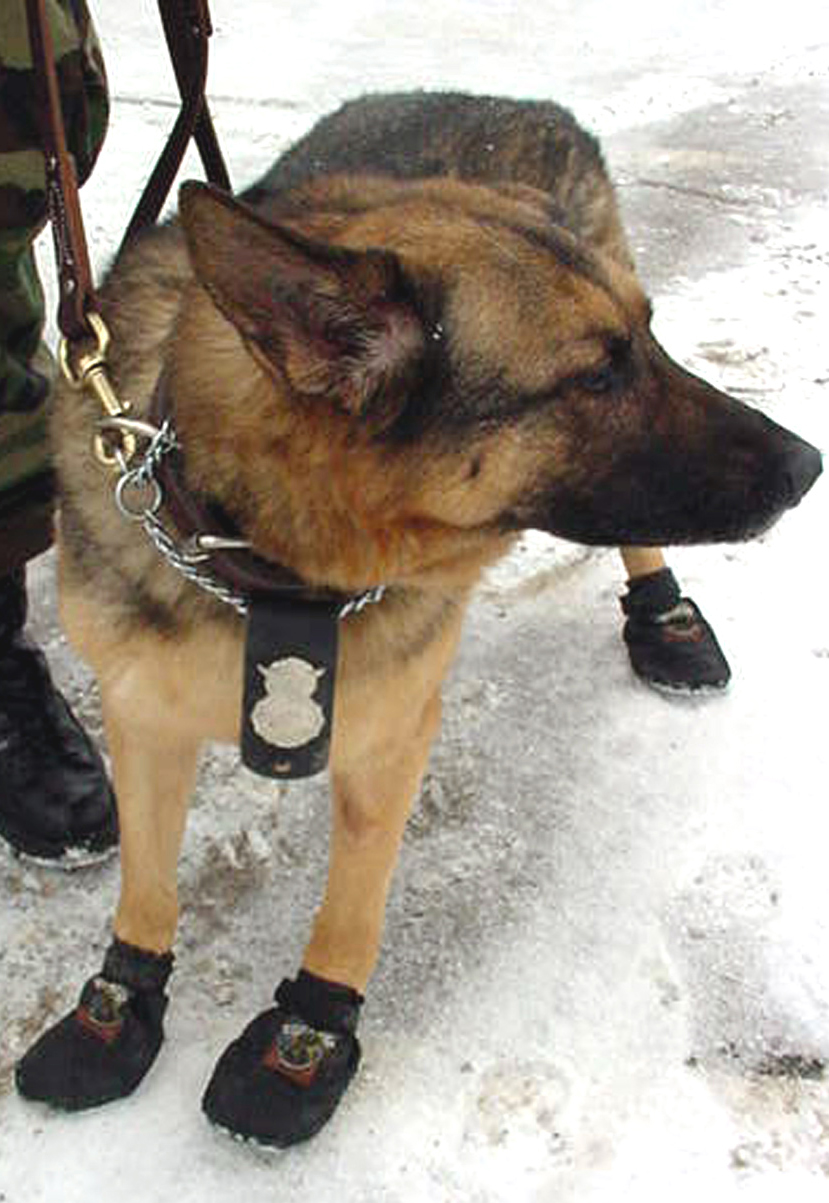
Where's my hat

GRAND FORKS AIR FORCE BASE, N.D. (AFPN) -- Cindy shows off her cold-weather boots here. She is a military working dog assigned to the 319th Security Forces Squadron.